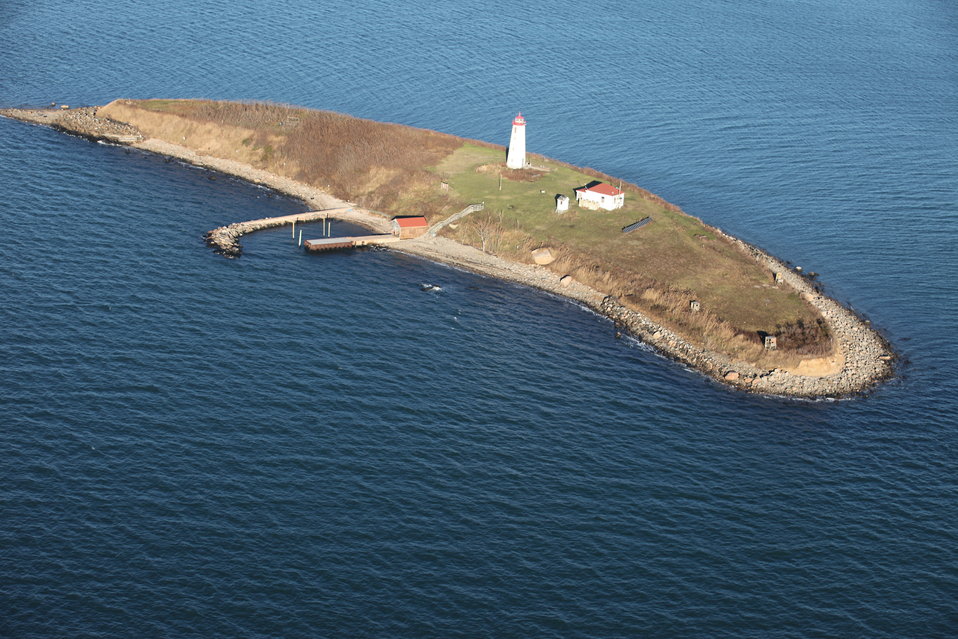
Stewart B. McKinney National Wildlife Refuge-Falkner Island (CT)

Aerial view of Falkner Island in the aftermath of storm Sandy.